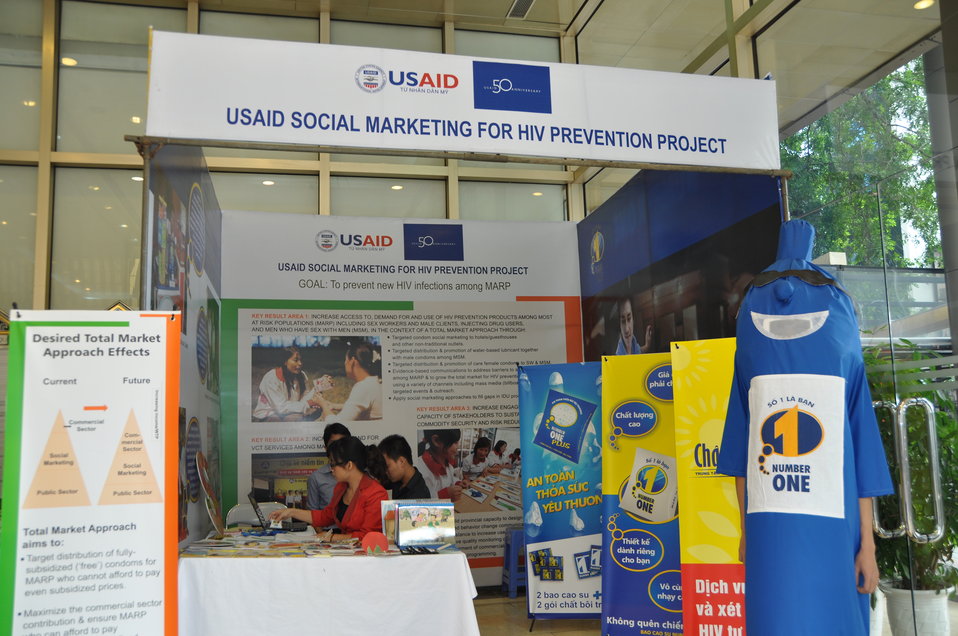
USAID Vietnam Open House 50th Anniversary, Hanoi